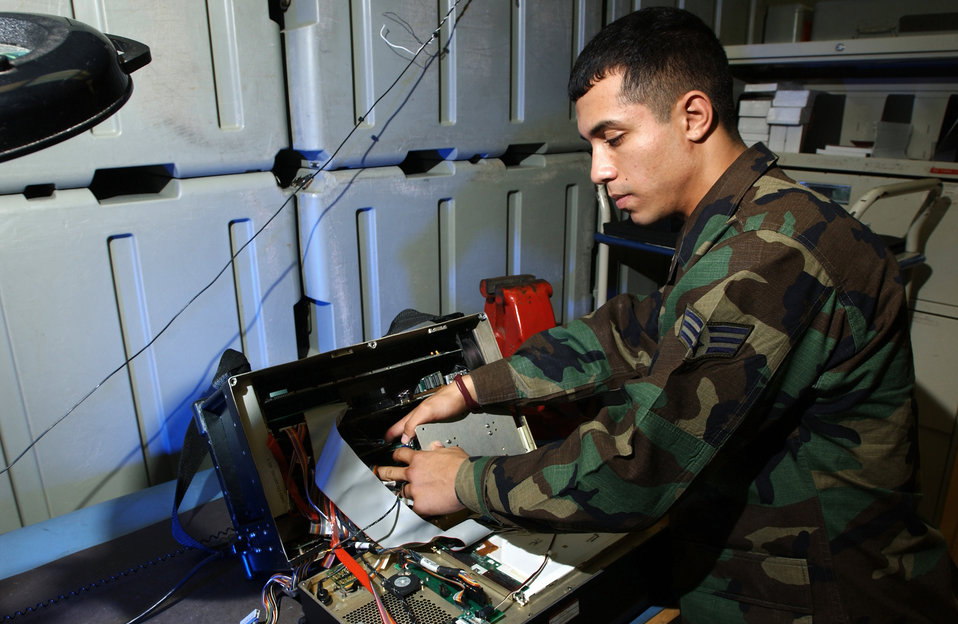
Avionics test lab

KADENA AIR BASE, Japan -- Senior Airman John Arango repairs an ESTS test station at the avionics test lab here Dec. 8. The ESTS test station is used to test flight control computers, radar units and communication systems on the F-15E Strike Eagle. Airman Arango is an avionics technician assigned to the 18th Component Maintenance Squadron.